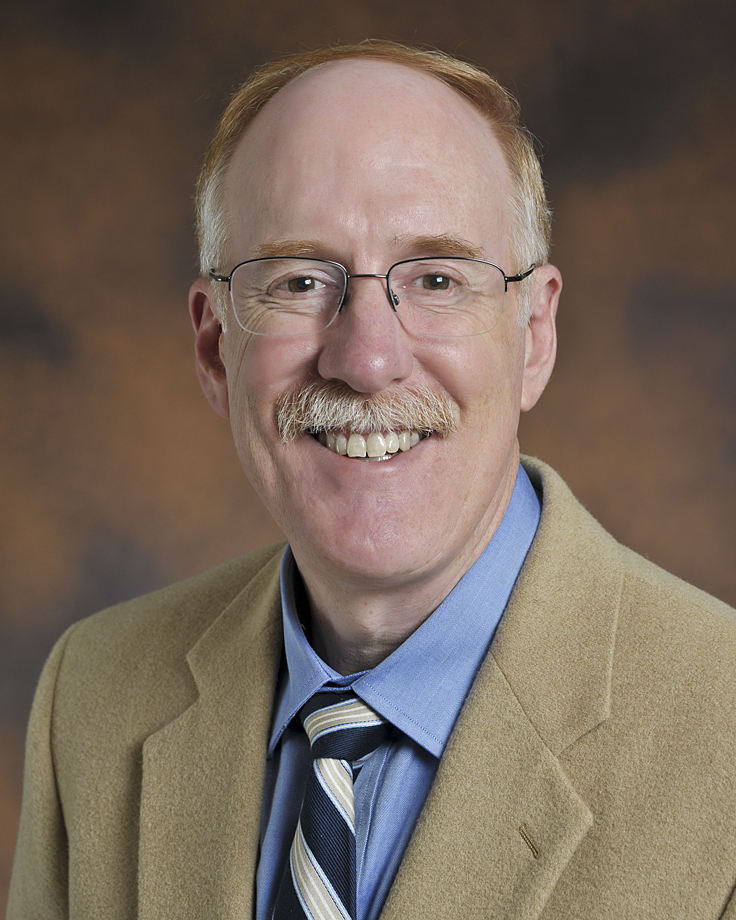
EM Office of Waste Processing Director Steve Schneider

When Japanese officials began cleanup of the Fukushima Daiichi Nuclear Power Plant accident that occurred this year, they called on the DOE to provide expertise and experience.

EM Office of Waste Processing Director Steve Schneider and a delegation of DOE technical experts responded by conducting a workshop recently in Tokyo to address technical issues involved in the Fukushima site cleanup. The Japanese officials were especially interested in learning about DOE’s expertise in the storage, treatment and disposal of radioactive waste, cleanup of damaged fuel and debris, and facility deactivation and decommissioning, said Schneider, who led the U.S. delegation.